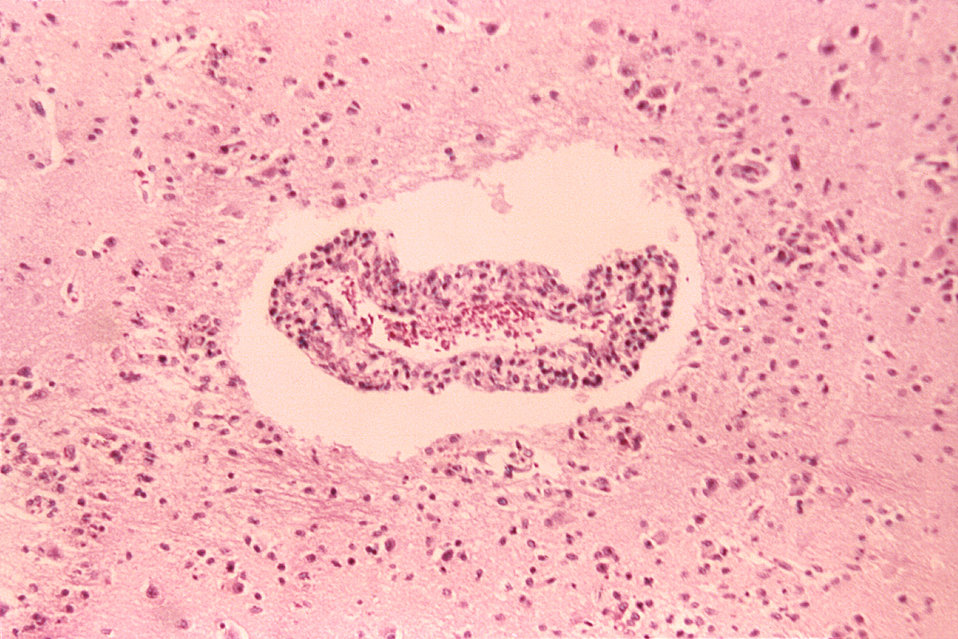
This H&E-stained micrograph depicts the histopathologic changes seen in brain tissue due to herpes encephalitis; Mag. 125x.